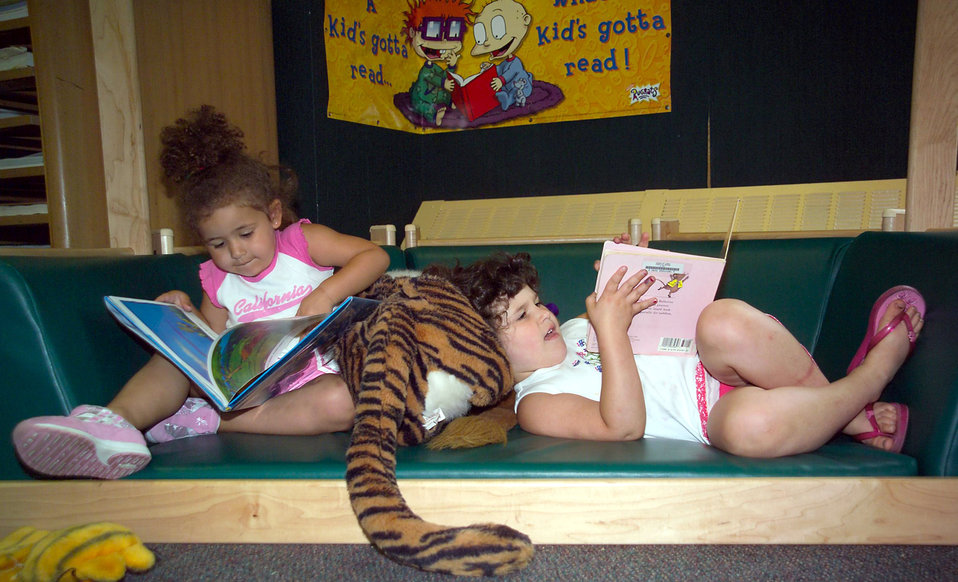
Two young girls reading books

Leila Elguessab, 3, daughter of Capt. Merideth Gilson, and Lily Huntoon, 5, daughter of Lisa Huntoon, lounge together while reading books at the library here. Both children are participating in the Dive Into Summer Reading program offered by the library.